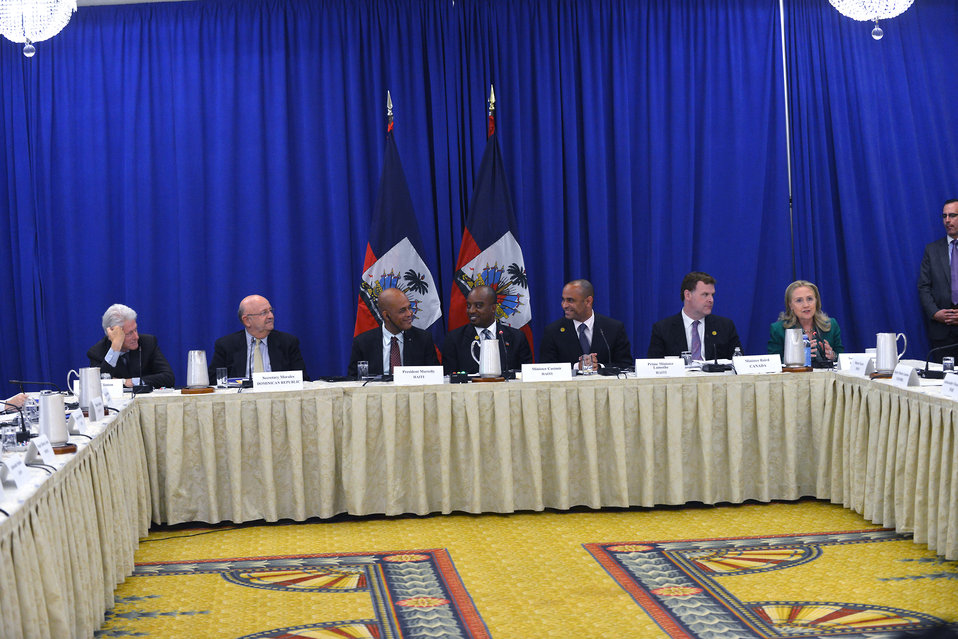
Secretary Clinton Delivers Remarks at the Haiti Partners Ministerial Meeting

U.S. Secretary of State Hillary Rodham Clinton delivers remarks at the Haiti Partners Ministerial meeting in New York, New York on September 27, 2012.